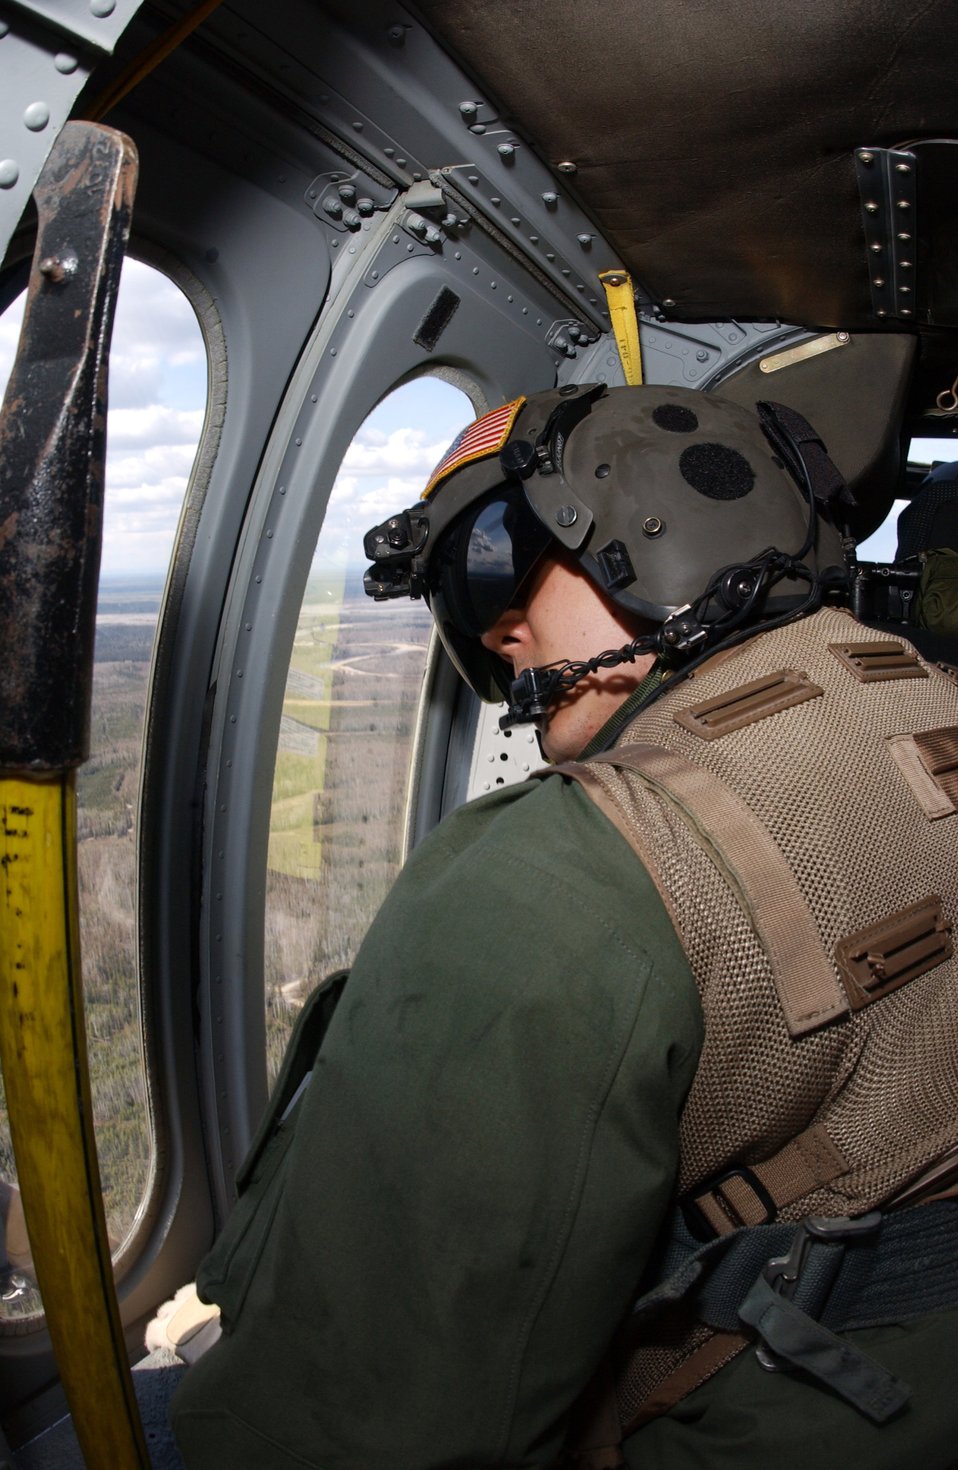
Keeping an eye on gas

Staff Sgt. Ken Gillum scans the terrain for suspicious activity during Exercise Northern Edge May 10 over the Trans-Alaska Pipeline System. The joint training exercise is designed to practice operations, techniques and procedures and enhance interoperability among all the services and civilian emergency response teams. Sergeant Gillum is an aerial gunner assigned to Det. 1, 210th Rescue Squadron.